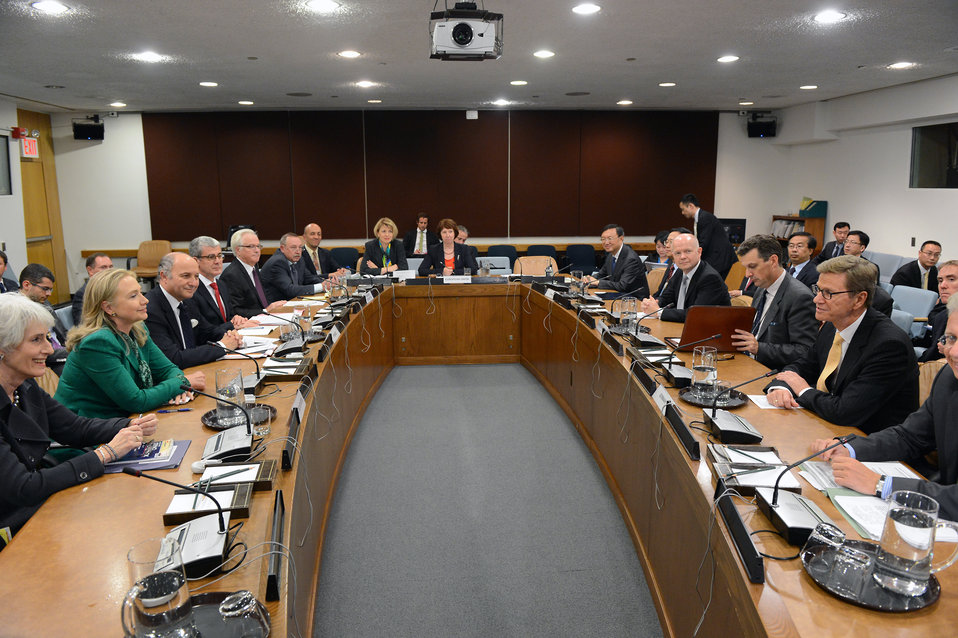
Secretary Clinton Attends the United Nations Security Council P5 1 Ministerial

U.S. Secretary of State Hillary Rodham Clinton attends the United Nations Security Council P5 1 Ministerial in New York, New York on September 27, 2012.